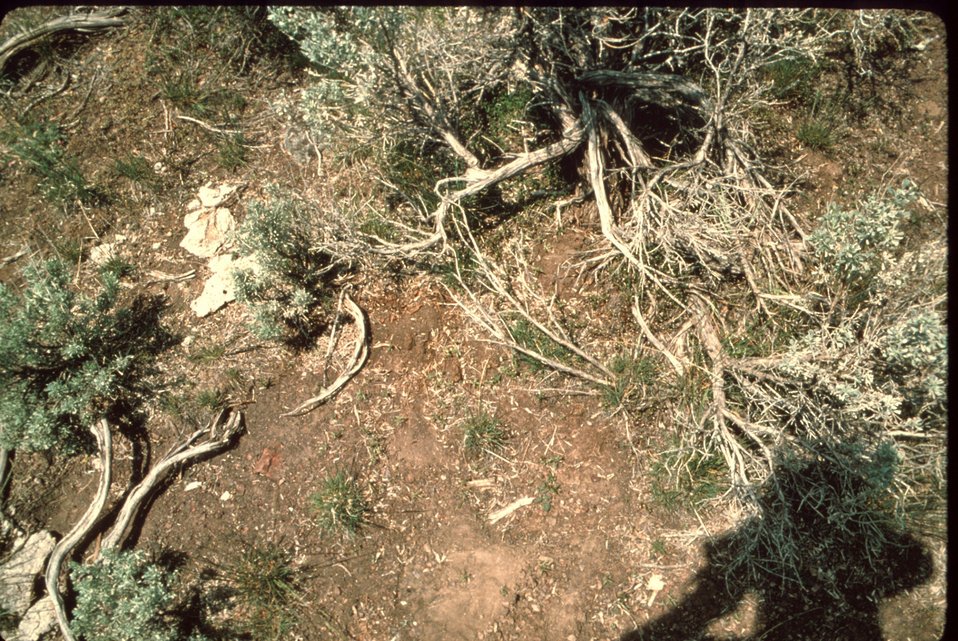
Habitat of Gymnosteris parvula Wildflower